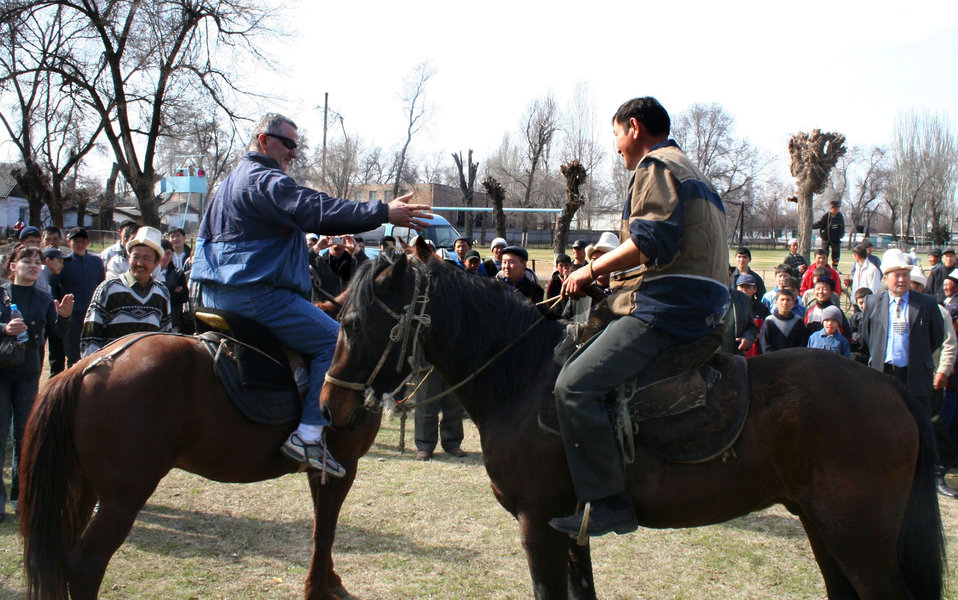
Manas AB and local community forge bonds of friendship

In Jani Jer, a village not far from Manas Air Base, Kyrgyzstan, Chaplain (Maj.) Mitchel Zygaldo reaches to shake hands with his competitor before horse wrestling, a Kyrgyz national sport. The chaplain and other 376th Air Expeditionary Wing leaders were invited by Mayor Batyrlan Kulov to join his village in celebrating Nooruz, a New Year celebration in some Muslim traditions.